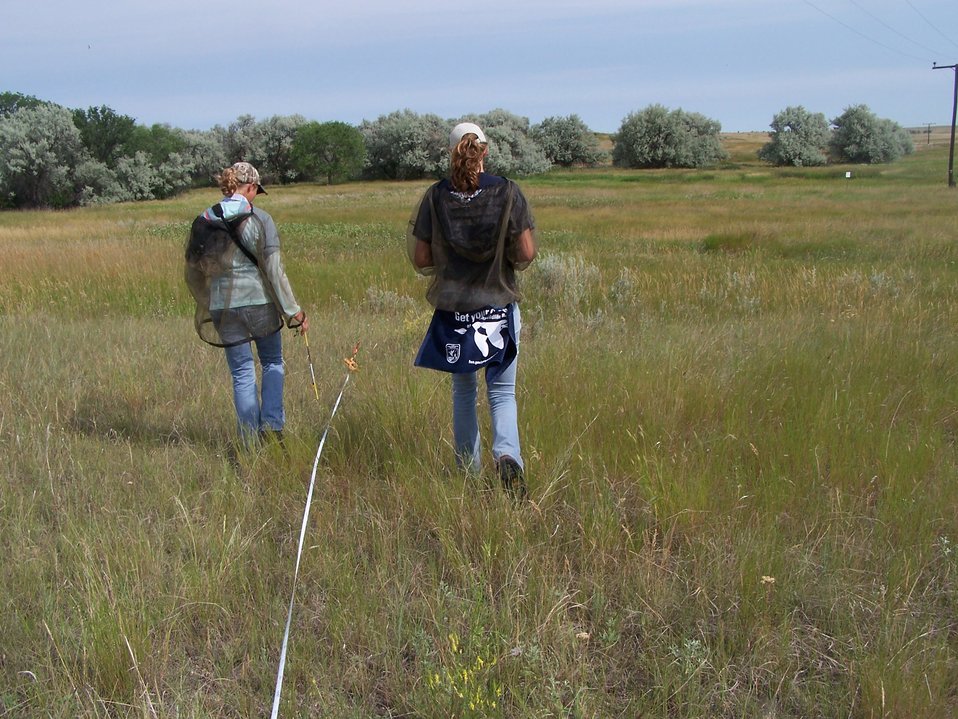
Get Your Goose On! - In the Field

Bowdoin NWR Summer Technicians doing vegetation transects with the GYGO towel.